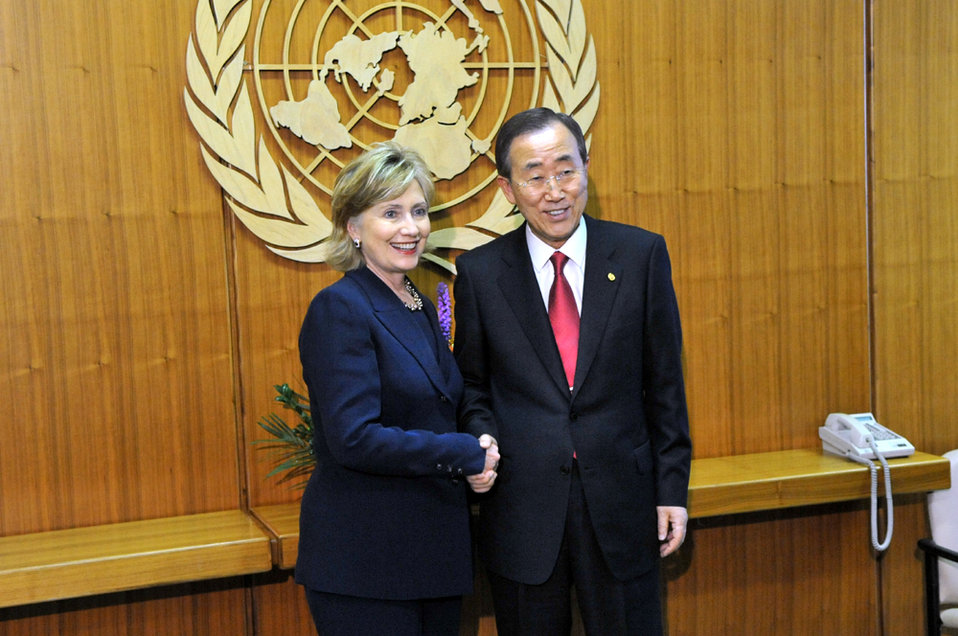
UNGA 2009: Quartet Meeting

U.S. Secretary of State Hillary Rodham Clinton poses with United Nations Secretary-General Ban Ki-moon during a meeting of the Quartet at the United Nations headquarters during the 64th Session of the UN General Assembly in New York City, New York September 24, 2009.